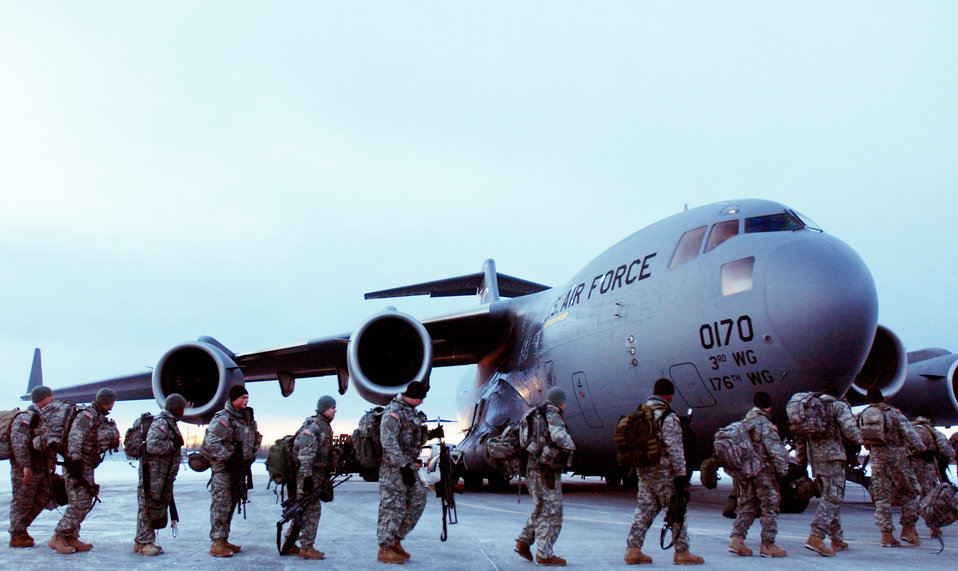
Air Force, Army forces join to support exercise

Soldiers from the Army's First Stryker Brigade at Fort Wainwright, Alaska, board a C-17 Globemaster III at Eielson Air Force Base, Alaska, that will transport them and their equipment, including two Stryker vehicles, to South Korea in support of a Foal Eagle exercise. The C-17 and its crew are from the 517th Airlift Squadron at Elmendorf AFB, Alaska.